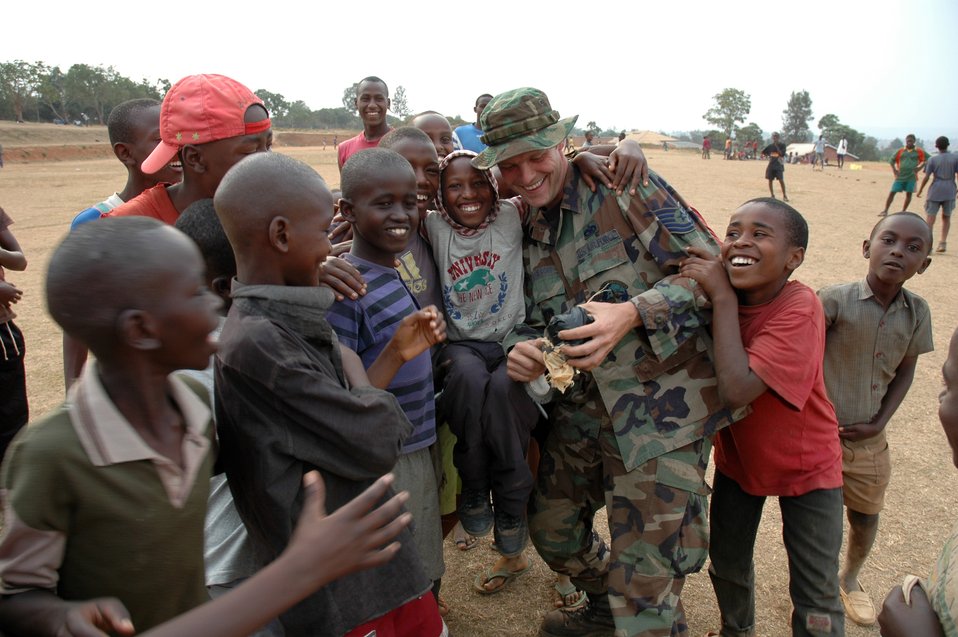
Airmen donate soccer balls, supplies to African school

KIGALI, Rwanda -- Tech. Sgt. Todd Jackson tries to
wrap a homemade ball made of plastic bags with green